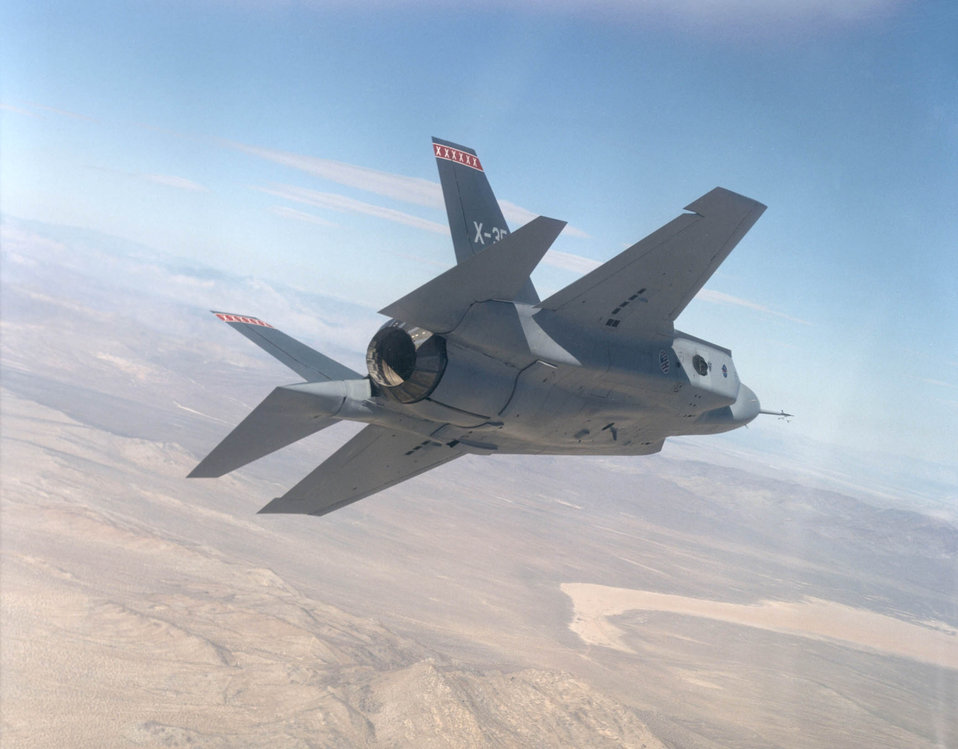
Joint Strike fighter

Lockheed Martin's Joint Strike Fighter concept demonstrator, the X-35A, broke the sound barrier Nov. 21, 2000, at Edwards Air Force Base, Calif. The X-35A has finished flight testing and now is being re-fitted in nearby Palmdale to become the X-35B.